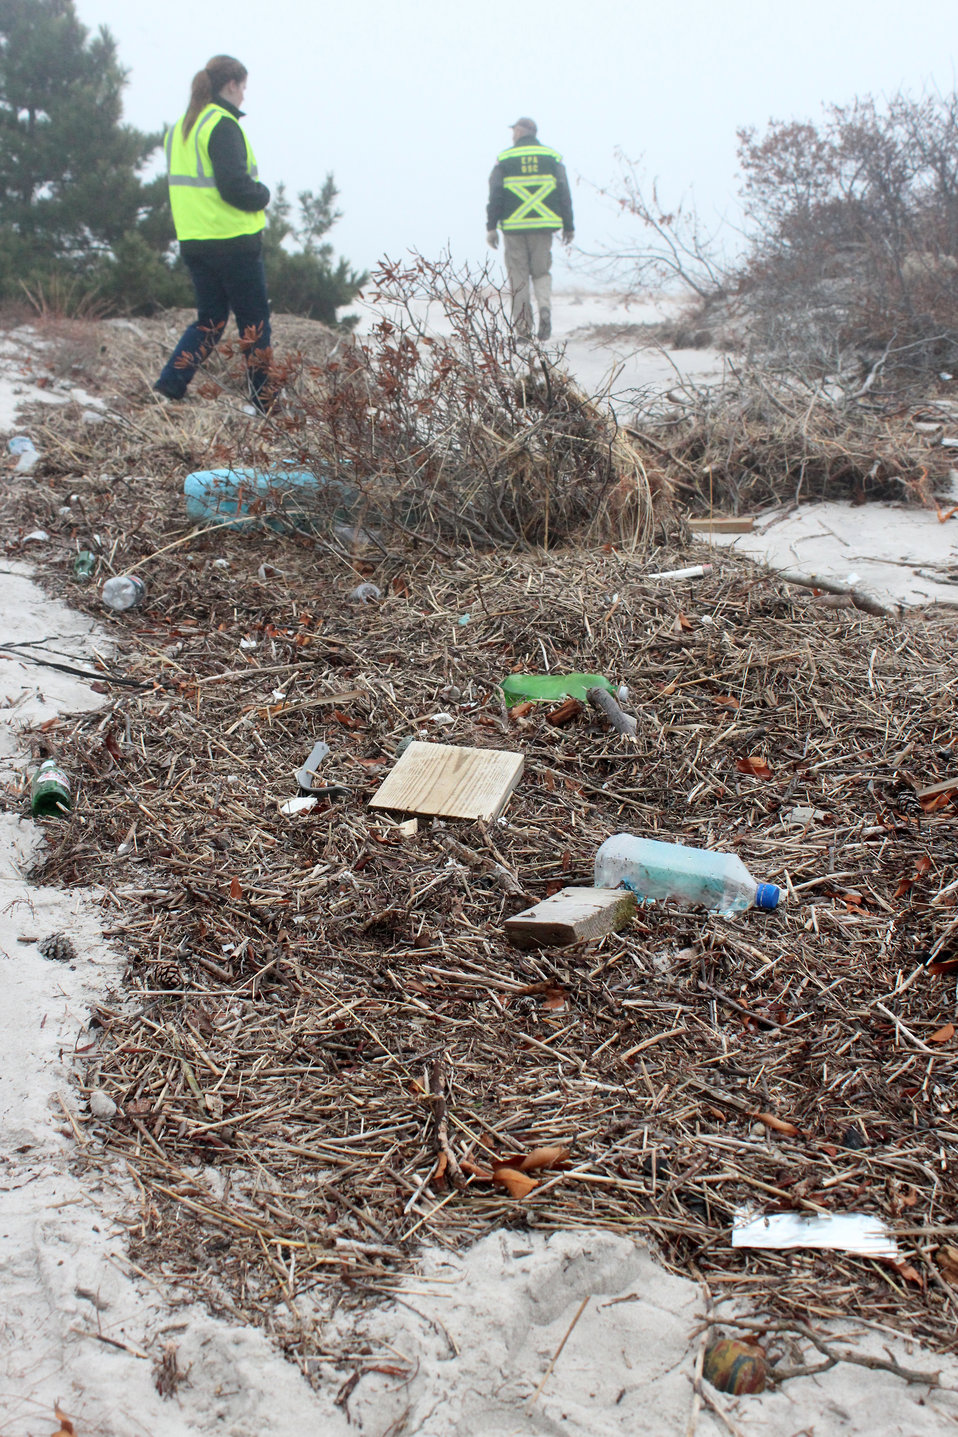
December 4, 2012 Fog prevents boat operations, so responders shift to assessing areas accessible by road

When it became unsafe to continue boat operations in times of thick fog, work crews covered what they could from the road. Oftentimes the debris line was in areas of dense brush, with debris left behind from the storm surge as deep as a few feet.

These search operations required wearing the proper protective gear – where there are boards there are nails. Gloves and steel insoles for boots were a necessary precaution.